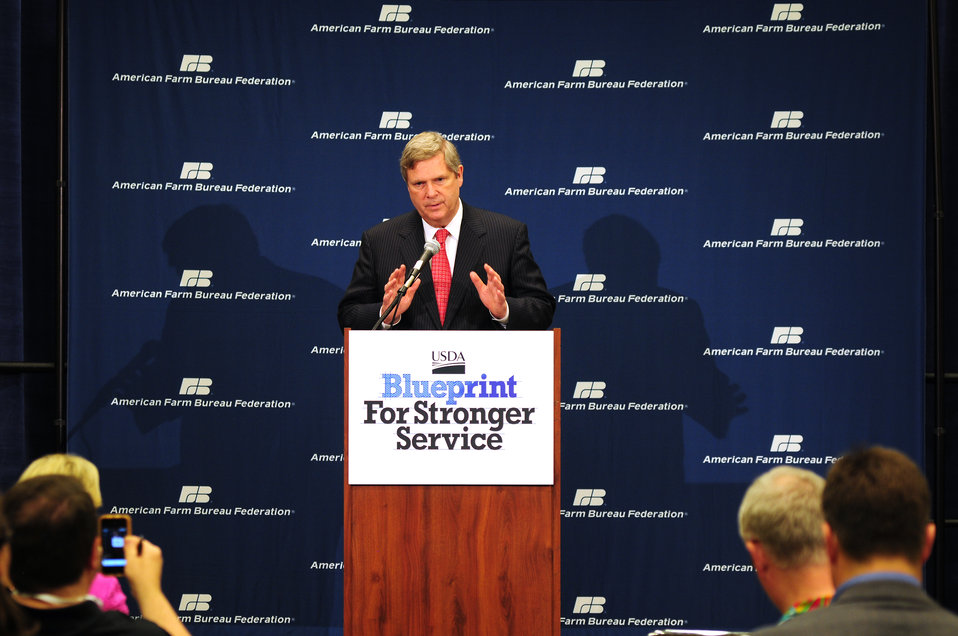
Agriculture Secretary Tom Vilsack presents USDA's Blueprint for Stronger Service, a plan to Increase Efficiency in USDA Operations, on Monday, January 9, 2012 in Honolulu, Hawaii.